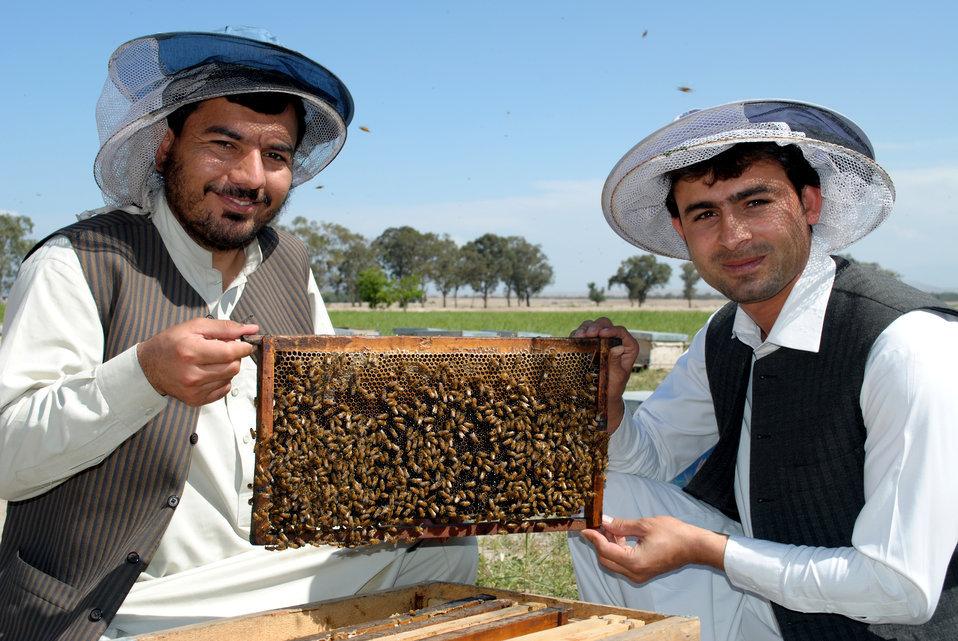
Honey Production

Afghan honey production was traditionally low, while domestic demand and prices are high. These conditions present great potential for beekeepers, and the northeast region of Afghanistan has a very suitable climate and terrain for beekeeping. USAID is working with honey farmers to improve the volume and quality of honey production in order to meet rising local demand.